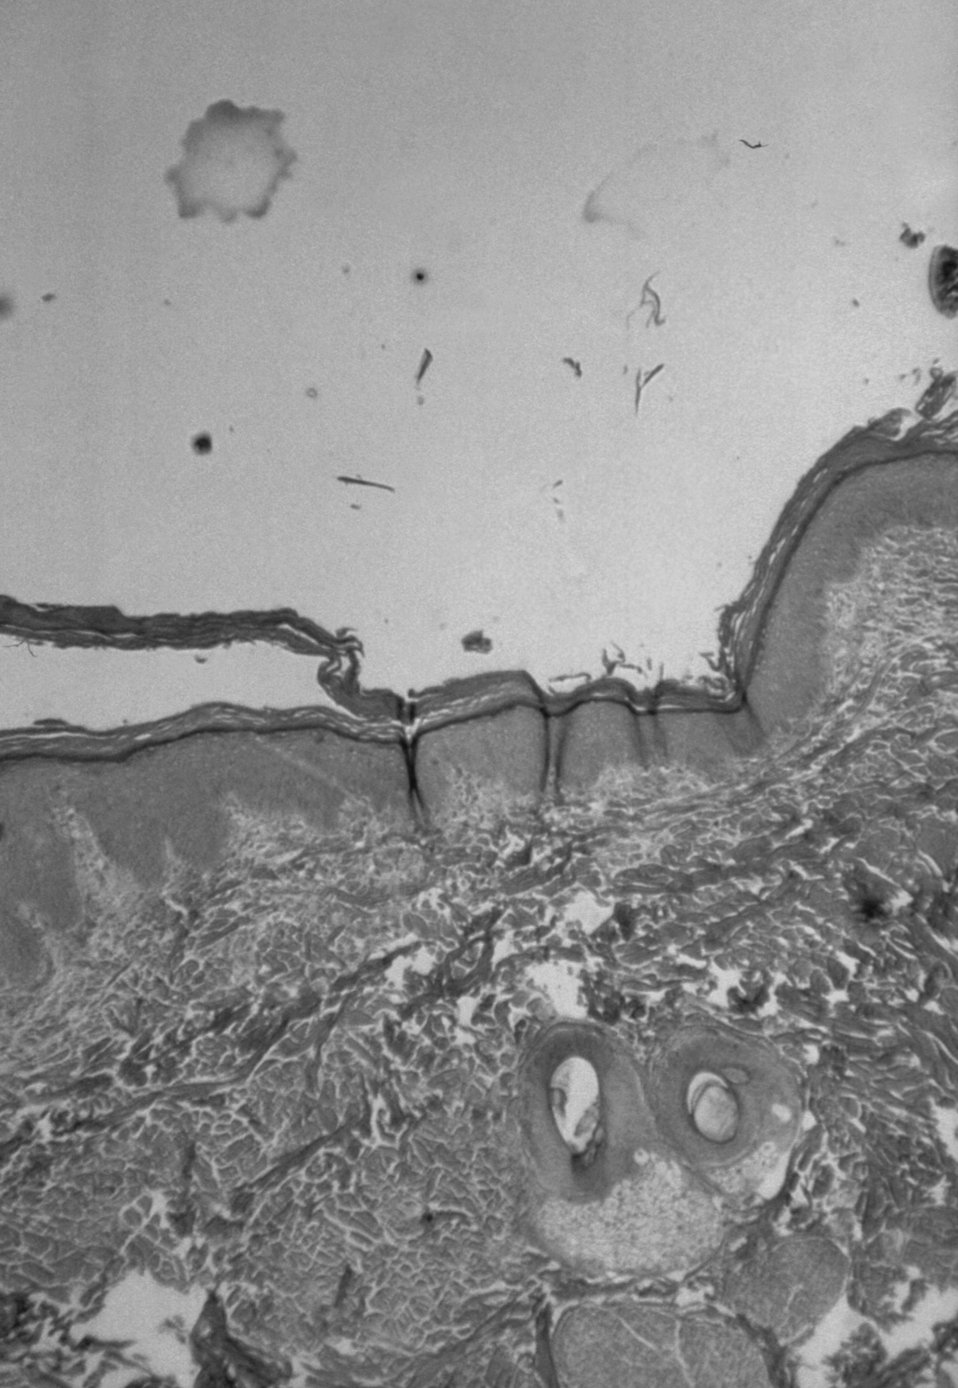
A photomicrographic study using H&E stain, of an early pinta, a skin lesion caused by the bacterium Treponema carateum.